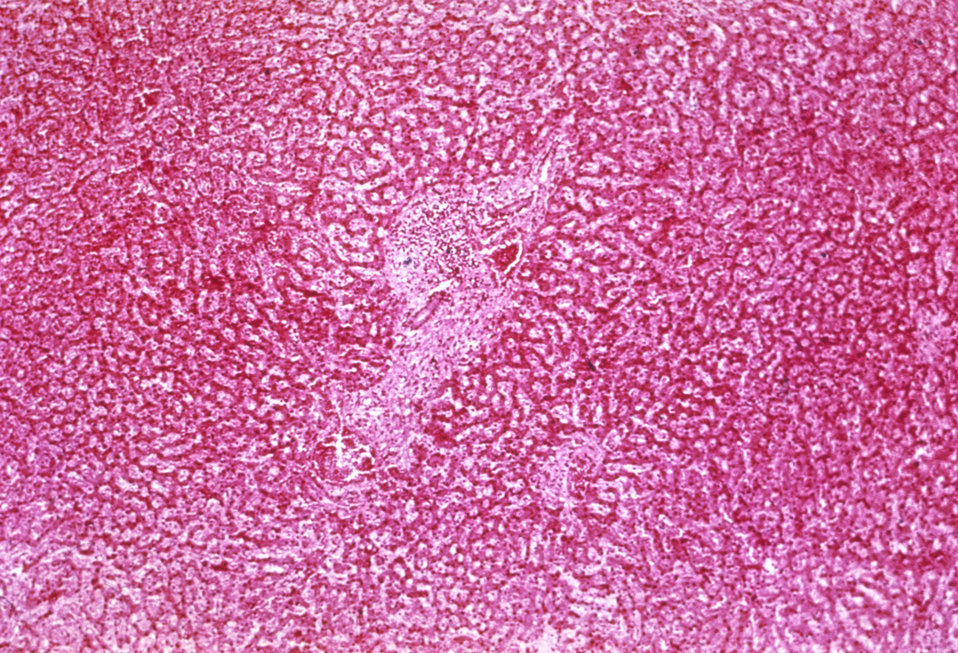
This photomicrograph reveals the histopathologic chronic inflammatory changes associated with paracoccidioidomycosis.